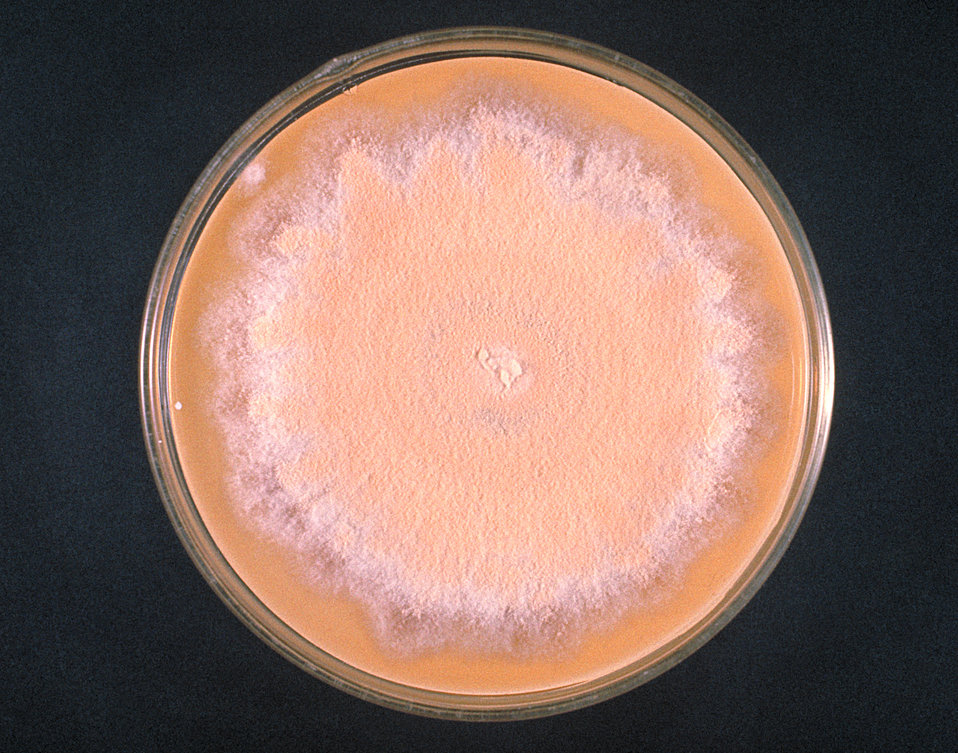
Sabouraud's dextrose agar plate of the fungi Trichophyton ajelloi at 4 weeks.